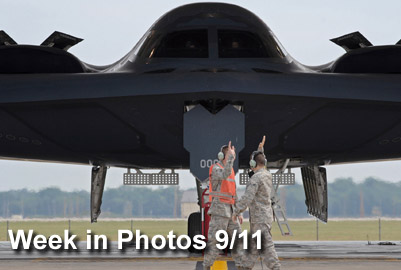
Week in Photos 9/11

Air Force Week in Photos for Sept.11 highlights photos from around the Air Force. In this photo by Senior Airman Kenny Holston, Airmen 1st Class Patrick Holter (left) and Patrick Dixon start the high-five salute as they prepare to launch the first B-2 Spirit of the day Sept. 8, 2009, on the Whiteman Air Force Base, Mo., flightline.